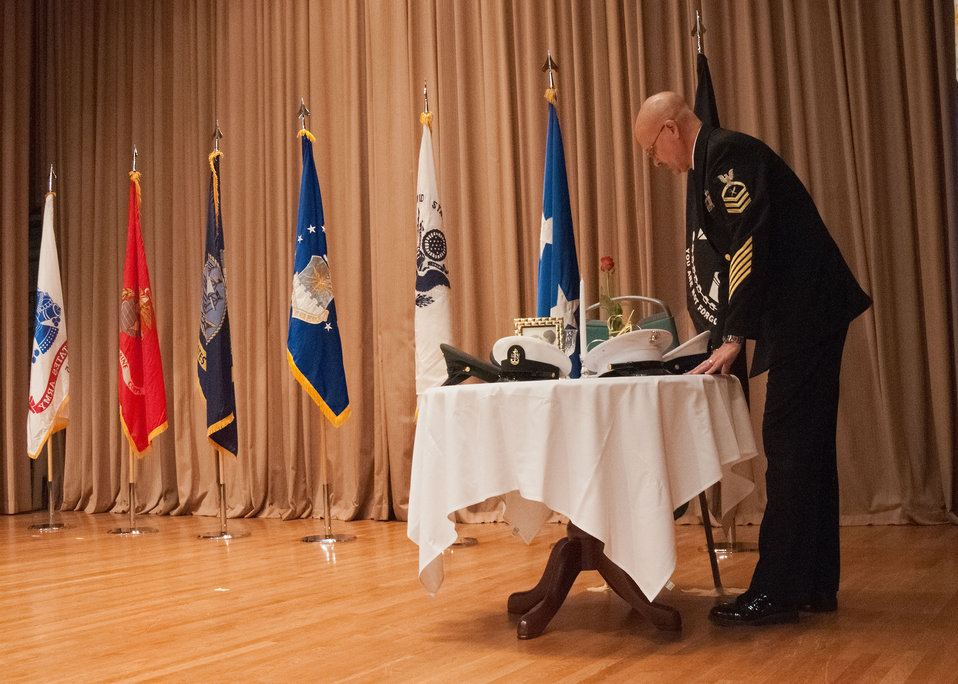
Classified National Security Programs, Office of Homeland Security and Emergency Coordination (OHSEC) U.S. Department of Agriculture U.S. Navy Chief Keith T. McElfresh adjusts the tablecloth on the POW/MIA Table at the U.S. Department of Agriculture Veterans Day Observance: Honoring All Who Served Wednesday, Nov. 7, 2012 in Washington, D.C. The POW/MIA Ceremony is an opportunity to remember those gallant individuals who fought and died for our country and paid an incredible price to help preserve the freedoms we enjoy today.